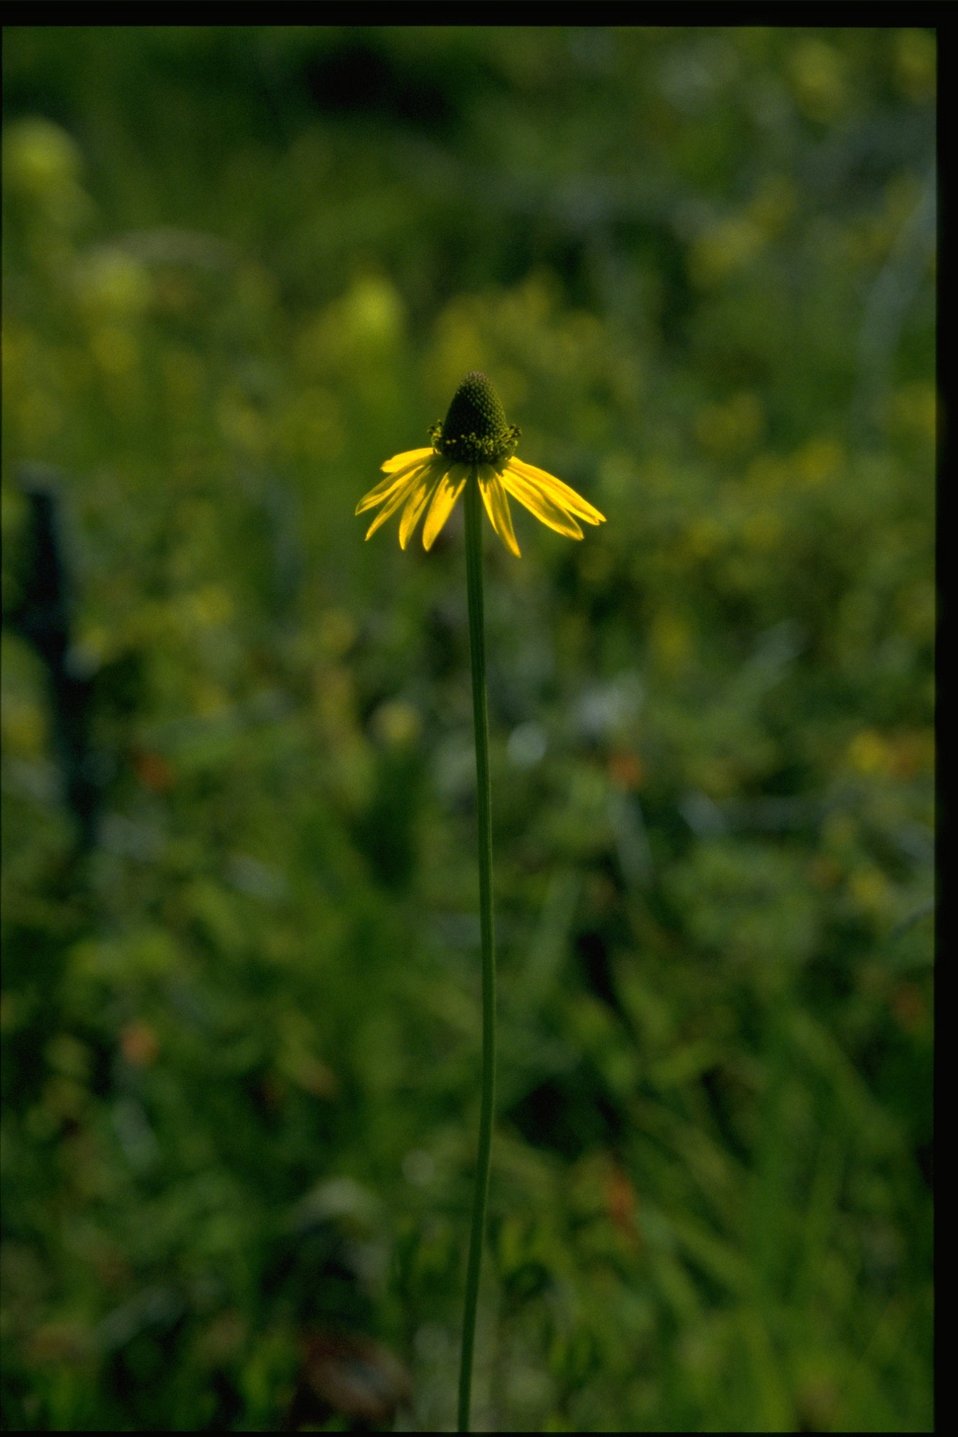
Medium shot of Rudbeckia californica var gluca.